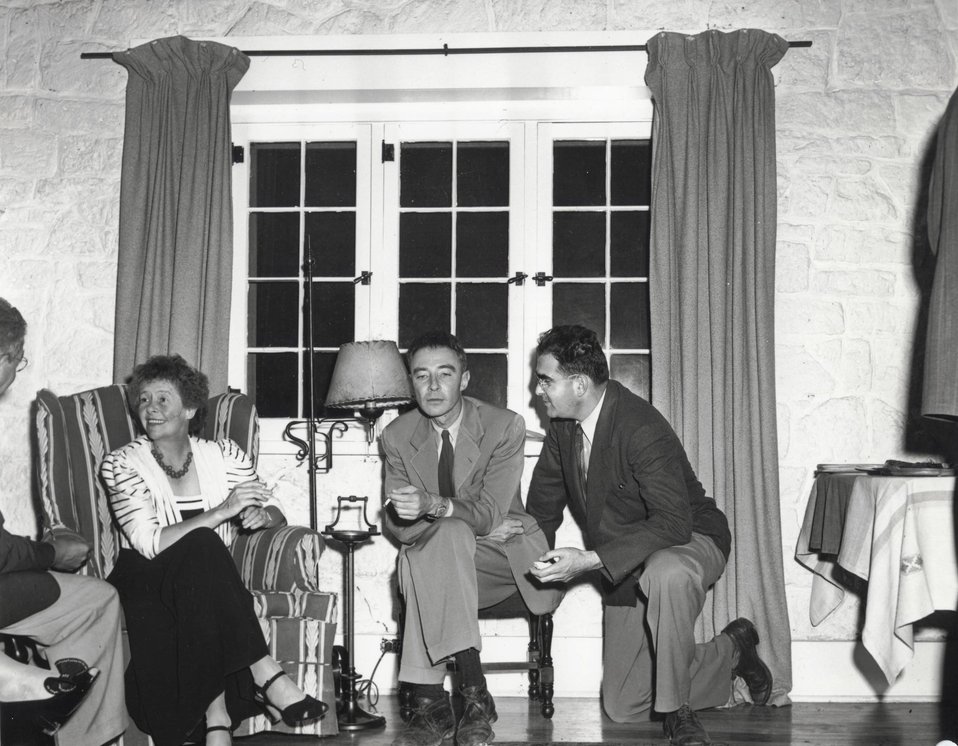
MCKIBBIN , R. OPPENHEIMER, WEISSKOPF